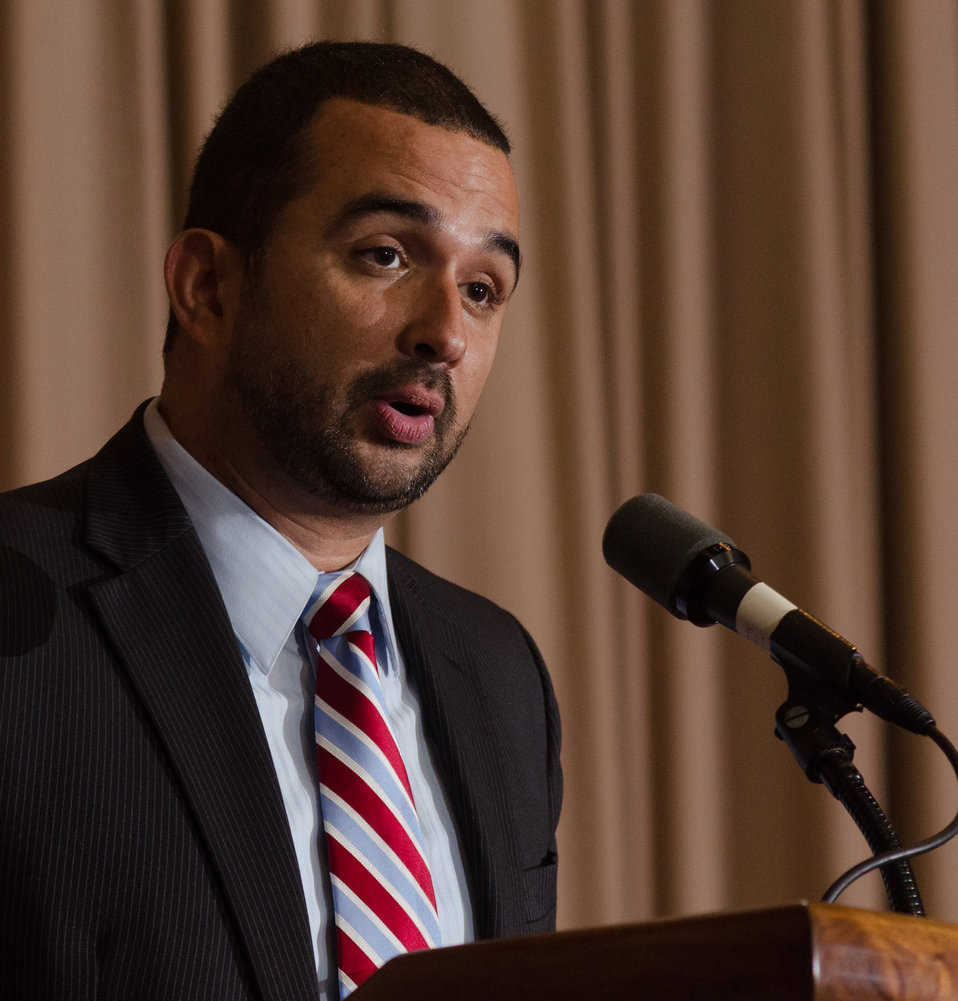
U.S. Department of Agriculture (USDA) Marketing and Regulatory Programs, Chief of Staff Elvis Cordova is the Master of ceremonies for the 2013 National Hispanic Heritage Month ”Hispanics: Serving and Leading our Nation with Pride and Honor,” on Thursday, Sept. 19, 2013, in the Jefferson Auditorium, USDA Headquarters, Washington, D.C.